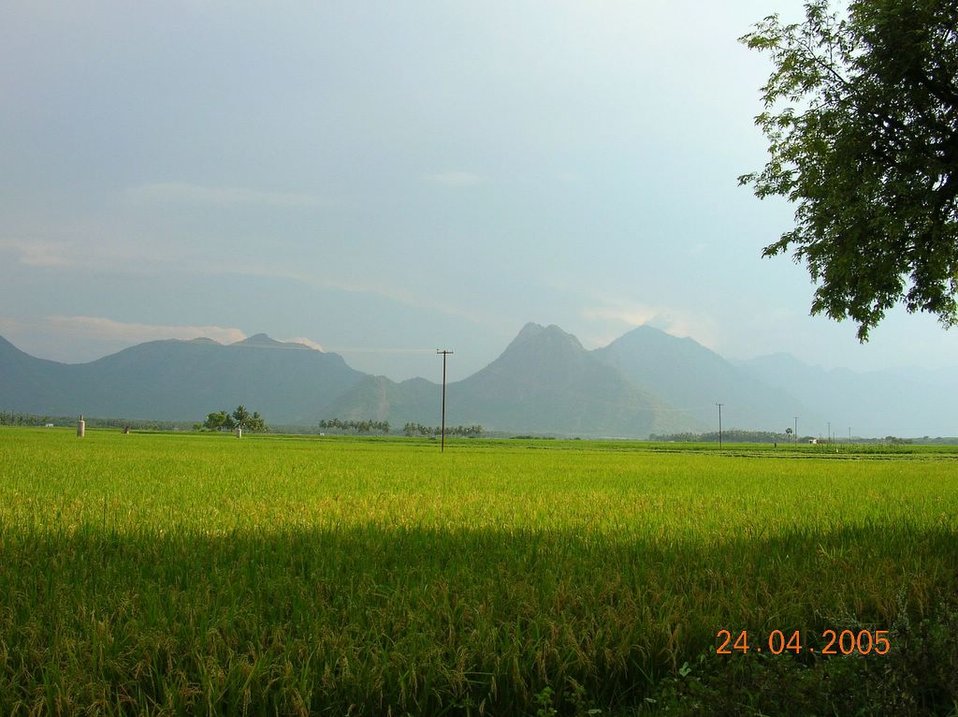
Paddy field in Theni district. own.